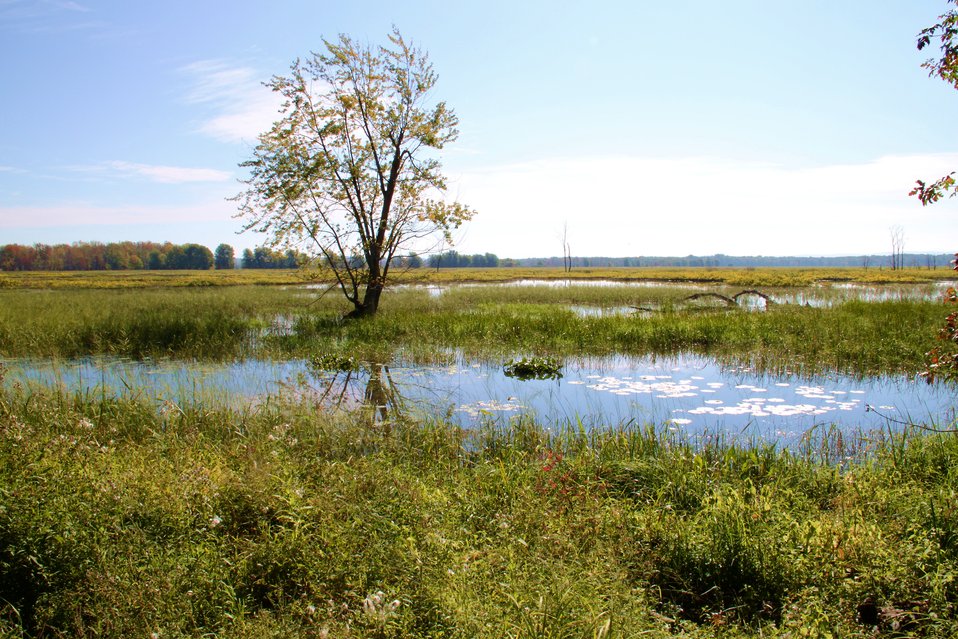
Cranberry pool 2011

Cranberry pool wetland management unit at Missisquoi National Wildlife Refuge.